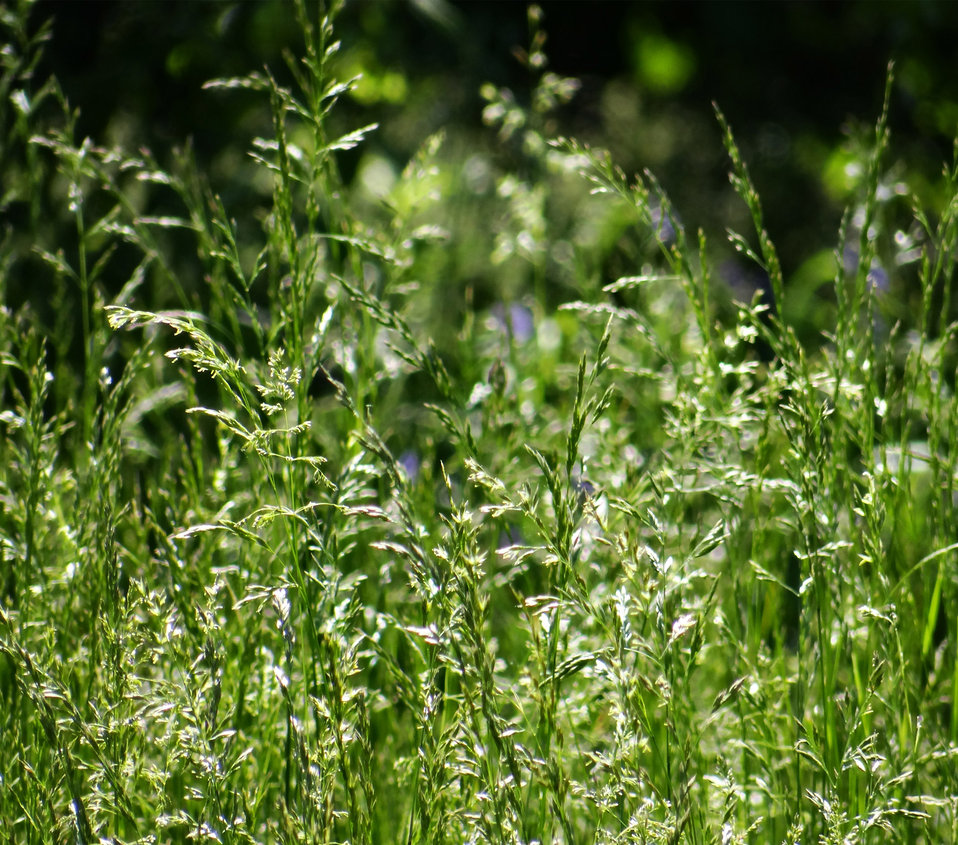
Tall grass with seeds

A close up shot of tall grass with seeds..